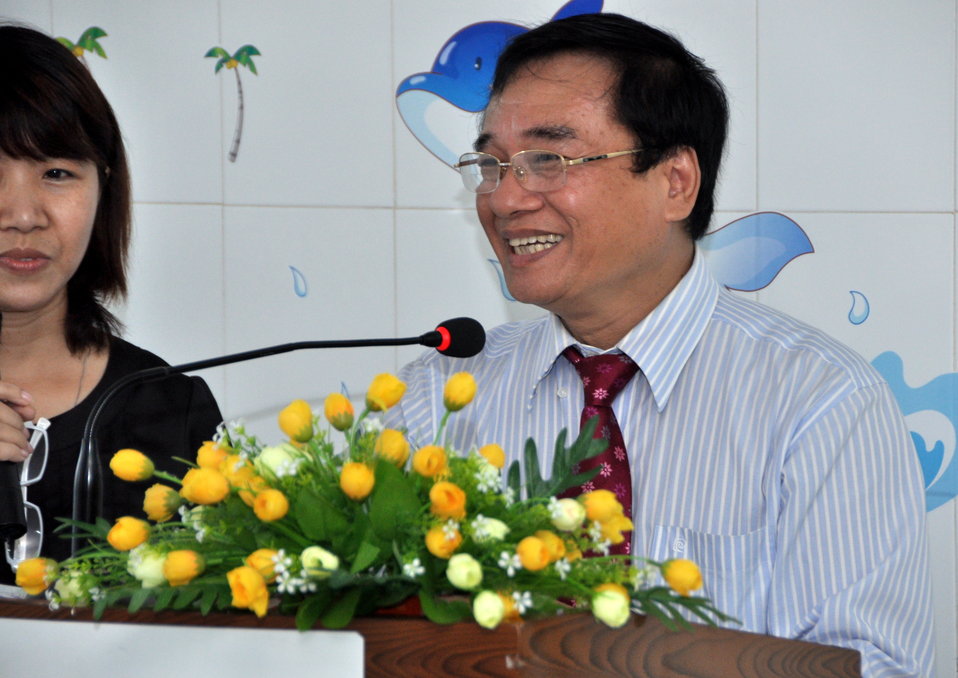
Mr. Luong Minh Sam, Director of the Danang Department of Foreign Affairs, USAID and Partners Join to Open Rehabilitation Department at Women's and Children's Hospital of Danang

July 16, 2013